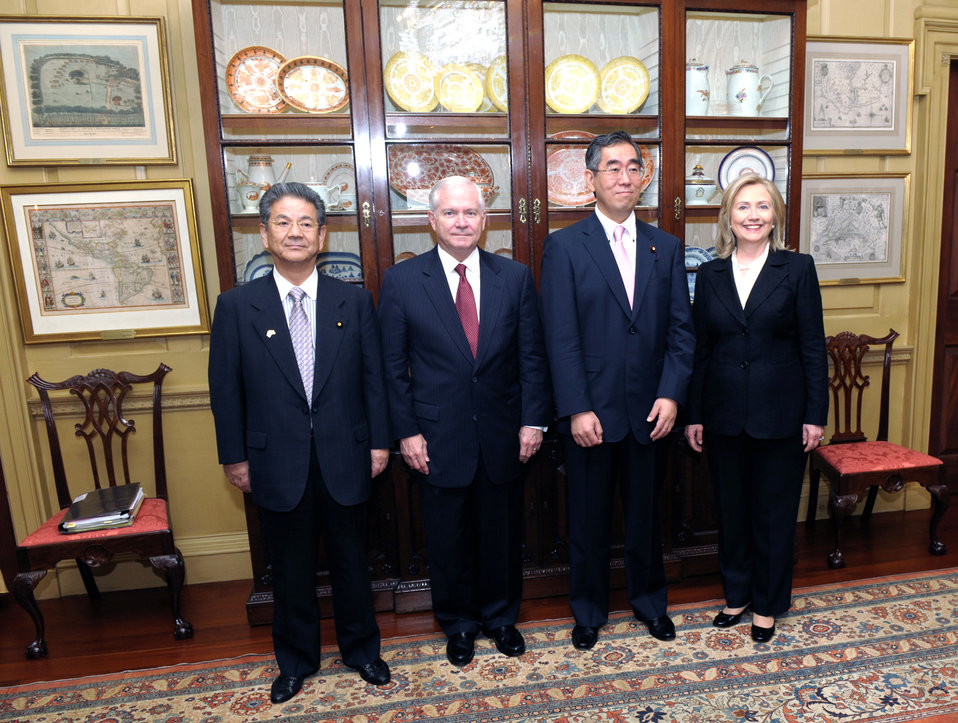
Secretary Clinton, Japanese Foreign Minister Matsumoto, Secretary Gates, and Japanese Defense Minister Kitazawa Pose for a Photo

U.S. Secretary of State Hillary Rodham Clinton, right; Japanese Foreign Minister Takeaki Matsumoto; center right; U.S. Secretary of Defense Robert Gates, center left; and Japanese Defense Minister Toshimi Kitazawa, left; pose for a photo after the U.S.-Japan Security Consultative Committee meeting, known as the 2 2, at the U.S. Department of State in Washington, D.C., on June 21, 2011.